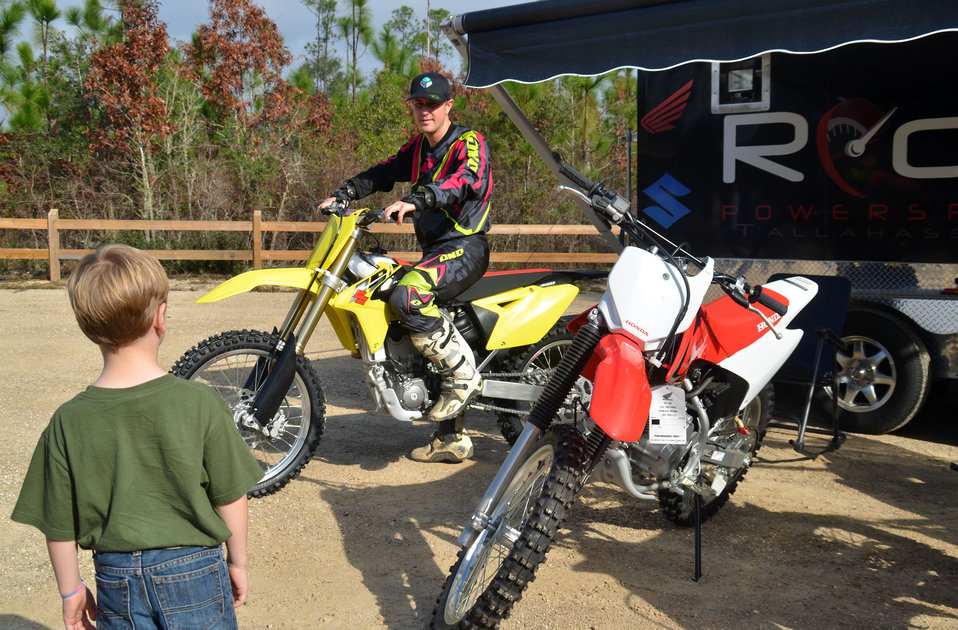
motorcylce Fla 5

A trail rider expert from Red Hills Powersports of Tallahassee, FL, answers questions from a young boy from nearby Crawfordville, FL., during the grand opening of the Springhill Motorcycle Trailhead. Forest Service engineers designed the recreational trailhead area to include spacious parking for visitors with trailers to offload motorcycles.